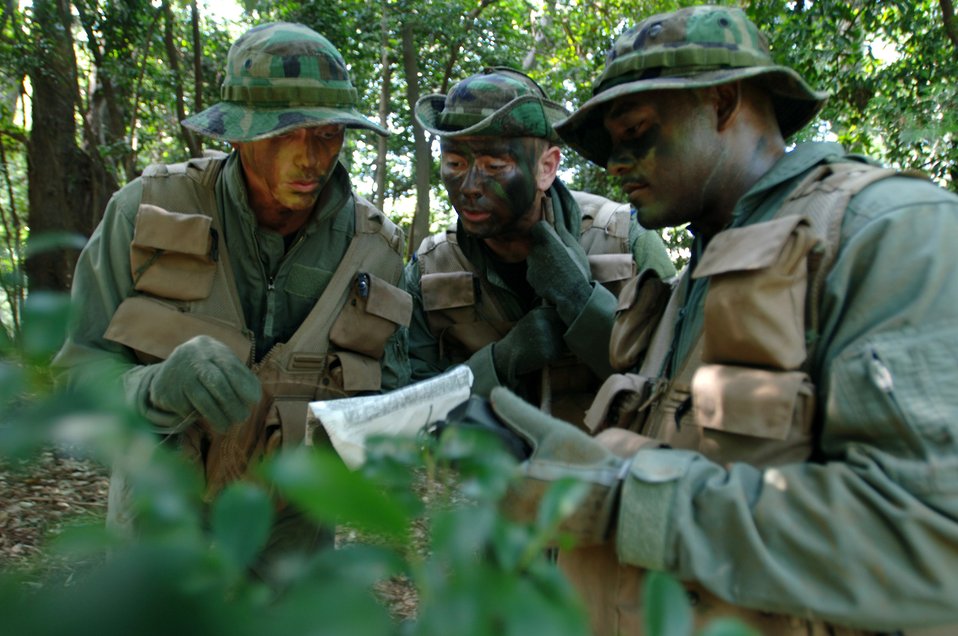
Playing with the enemy

YOKOTA AIR BASE, Japan -- (From left) Airman 1st Class Ron Rabineau, 1st Lt. Andrew Salcido and Tech. Sgt. C.J. McClain use a map to evade enemy forces after their aircraft was